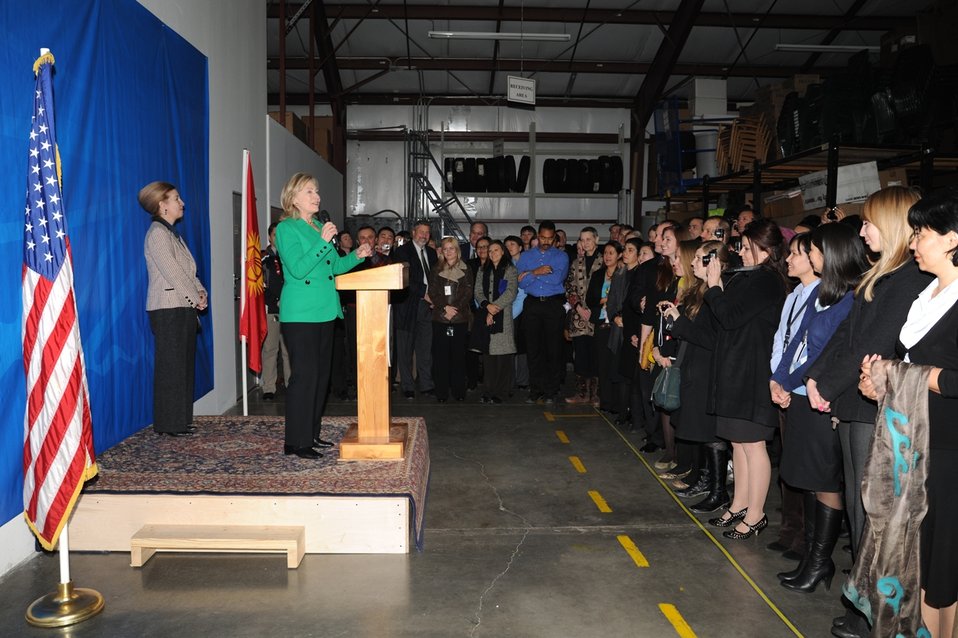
Secretary Clinton and Ambassador Gfoeller Speak With Embassy Bishkek Staff

U.S. Secretary of State Hillary Rodham Clinton and U.S. Ambassador to Kyrgyzstan Tatiana Gfoeller speak with U.S. Embassy Bishkek staff in Bishkek, Kyrgyzstan on December 2, 2010.